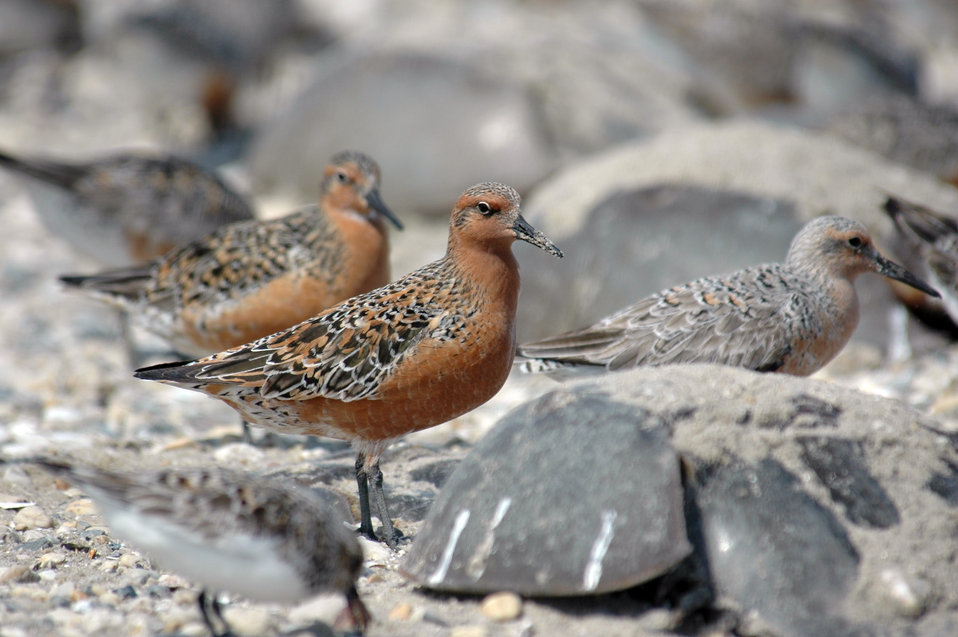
Red Knot

Mispillion Harbor, Delaware.